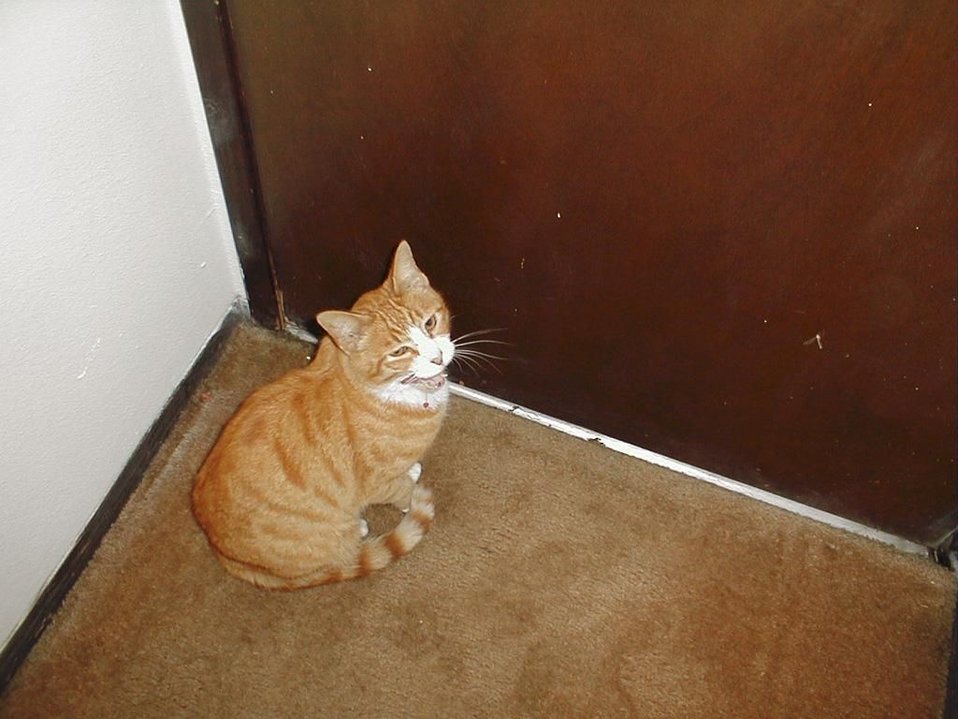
English:
Image title: Domestic cat sitting by door Image from Public domain images website, http://www.public-domain-image.com/full-image/fauna-animals-public-domain-images-pictures/cats-and-kittens-public-domain-images-pictures/domestic-cat-sitting-by-door.jpg.html